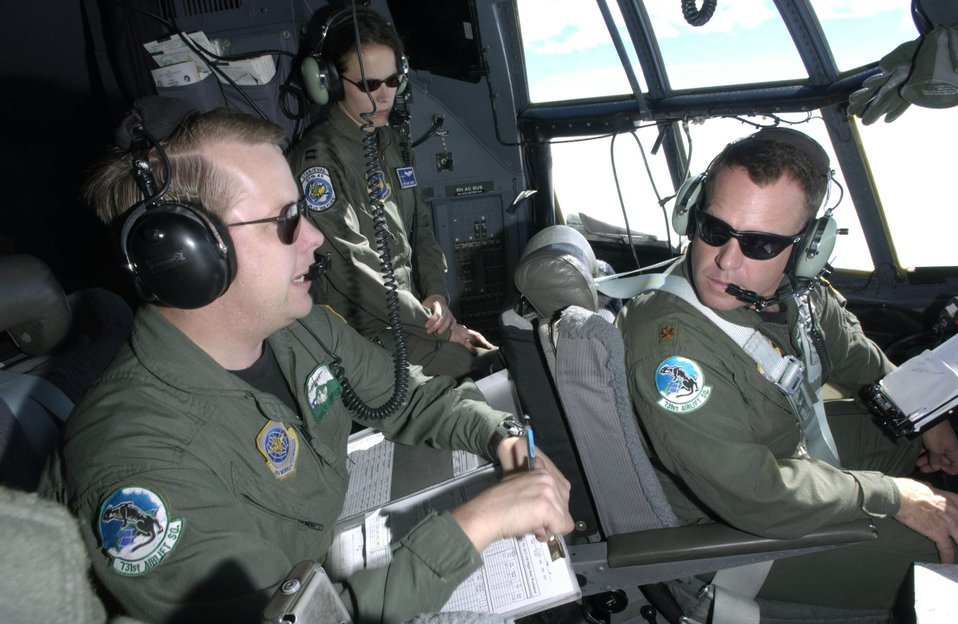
Flying high

OVER BOSNIA-HERZEGOVINA -- Capt. Stephanie Jardine listens in as Maj. Dave Laslo and Tech. Sgt. Dan Landers discuss the plane's engine settings while completing a mission to Tuzla Air Base and Pristina, Kosovo, before returning to Ramstein AB, Germany. Major Laslo is a C-130 Hercules pilot, and Sergeant Landers is a flight engineer with the 731st Airlift Squadron at Peterson Air Force Base, Colo. The squadron is temporarily assigned to Ramstein. Captain Jardine is assigned to the 37th AS at Ramstein.